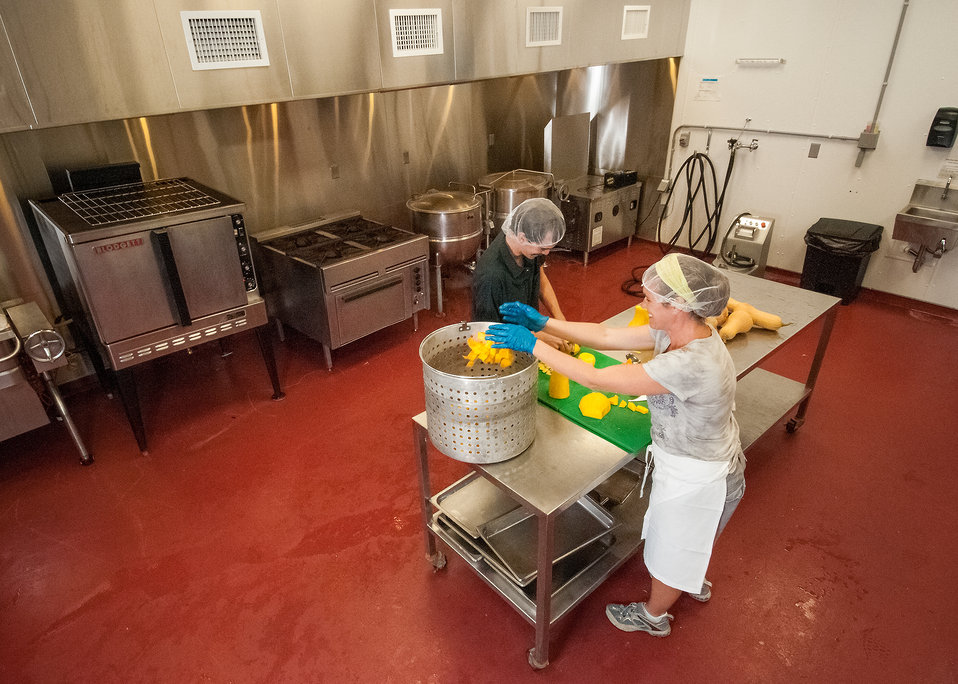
Allyson Spanier tosses butternut squash into a large pot to be combined with baked apples for her Baked Apple and Squash baby food at the Vermont Food Venture Center in Hardwick, VT. Spanier explains why she started Vermont Baby: “I wanted to provide parents with some unique, healthy, tasty options that they would feel good about feeding to their babies.” Her goals have been met. The baby food she makes is purely Vermont with organic ingredients from local farmers.The Vermont Food Venture Center, a non-profit multi-purpose incubator kitchen and food processing facility operated by the Center for an Agricultural Economy in Hardwick, VT received assistance through a U.S. Department of Agriculture (USDA) Rural Development (RD) Rural Business Enterprise Grant (RBEG). The grant offers farmers in a region of rural America that celebrates food, farm and local economy the tools necessary to convert crops to value added business to start or expand their food-based business with the potential to create jobs and increase economic opportunity on Sep. 19, 2013.